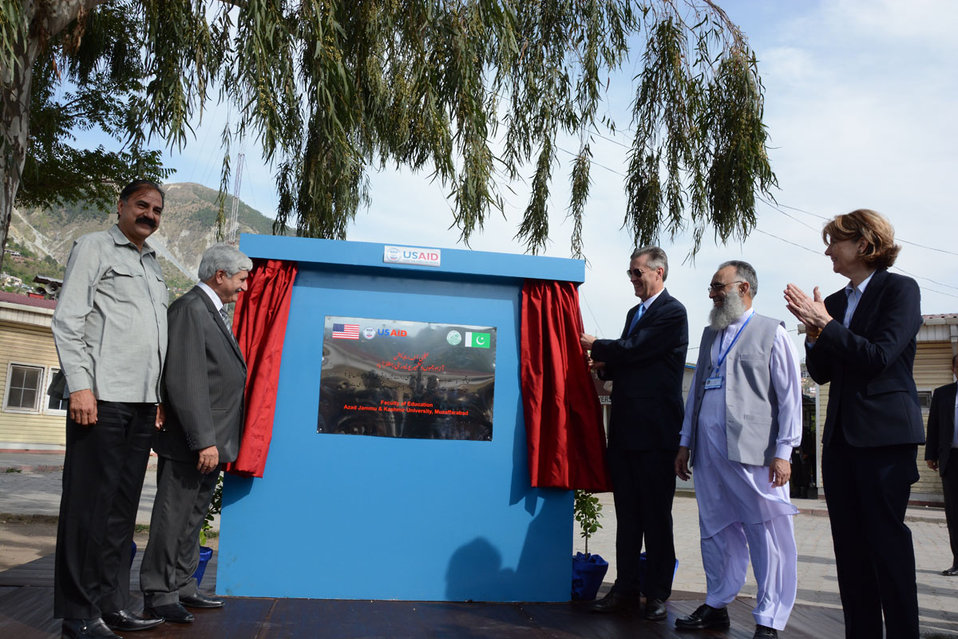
The United States Ambassador to Pakistan, Richard Olson broke ground for a U.S. funded construction of a new Faculty of Education building in Muzaffarabad, AJK. 34